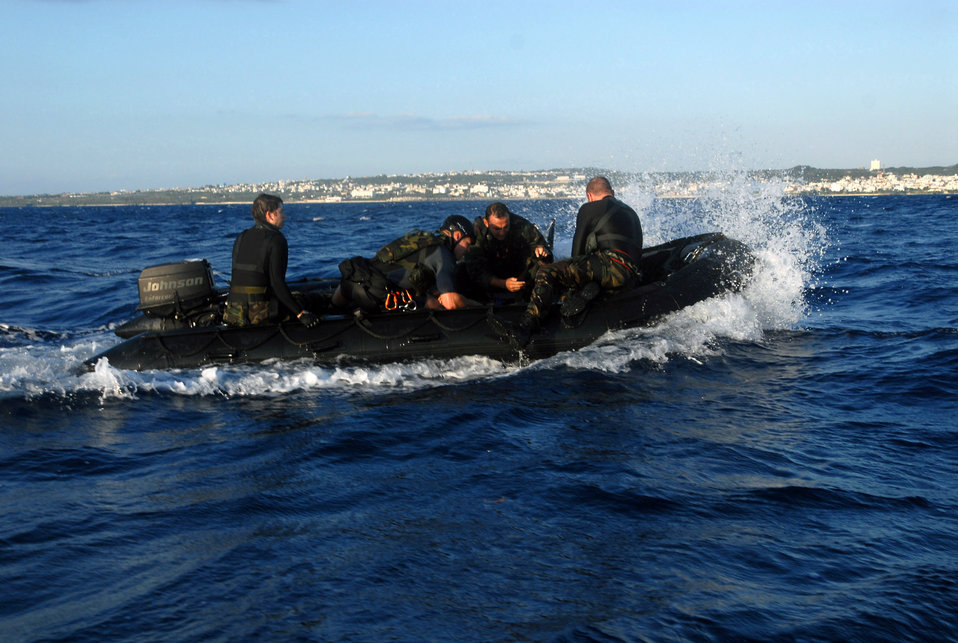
Trouble afloat

Members of the 31st Rescue Squadron return Capt. Derek Flynn to Kadena Air Base, Japan, after pulling him out of the waters off the coast of Okinawa Oct. 24. Captain Flynn of the 67th Fighter Squadron was placed in the water as part of a survival, evasion, resistance and escape exercise during a Kadena AB operational readiness exercise.